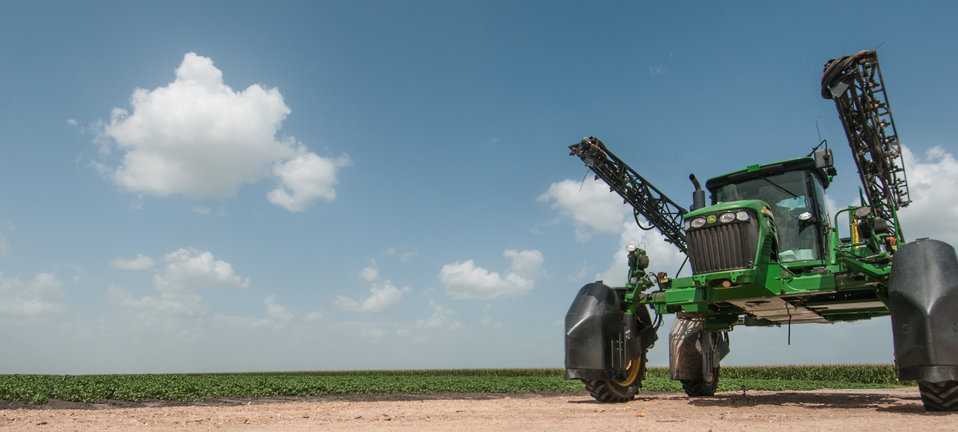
Josh Marek performs an operational check of a sprayer before heading to a local farm in Wharton County, TX on Jun. 20, 2013. Marek is a new small farm owner with 700 acres of corn and cotton that he started in 2007. Marek has been working on the farm since he was 15 and supports his wife Terry and 1-year old son.